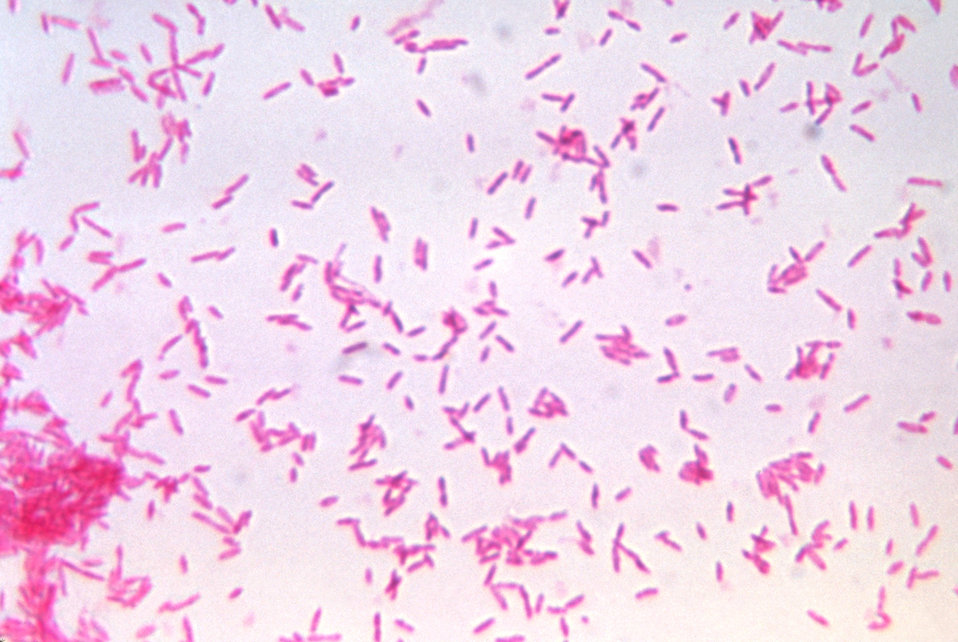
This photomicrograph shows the bacterium Bacteroides biacutus cultured in a thioglycollate medium for 48 hours.